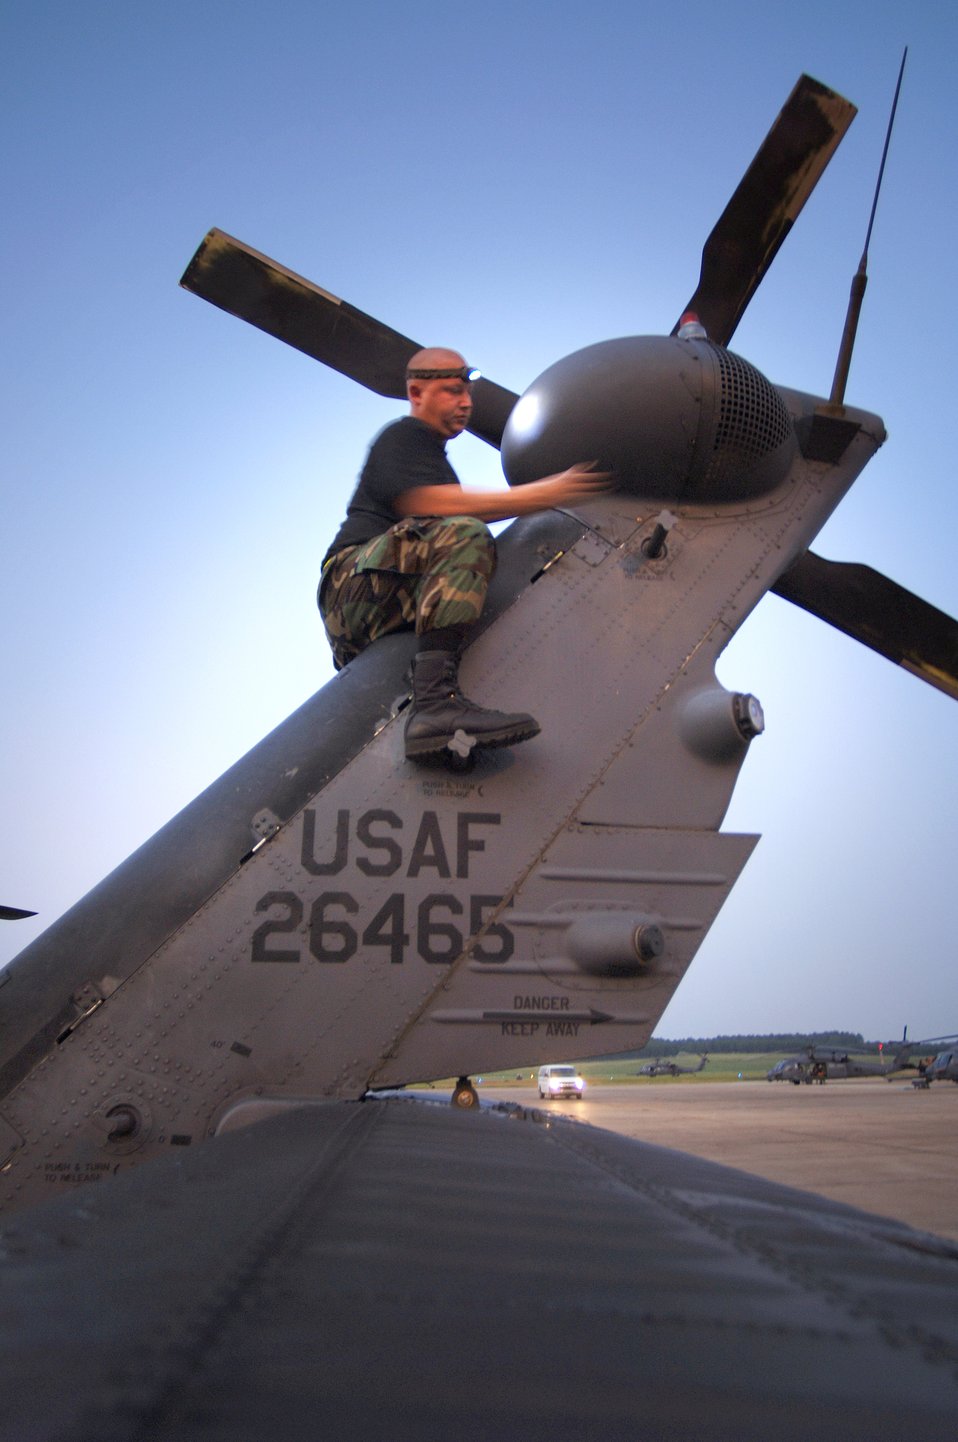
Hurricane relief mission

JACKSON, Miss. -- Staff Sgt. Daniel Woltz helps quick-turn an HH-60G Pave Hawk for a new search and rescue mission. There are more than two dozen helicopters of various types in the group here from six active duty and Reserve bases. Flying day and night, they are taking part in the biggest search and rescue operation in U.S. history. Sergeant Woltz is a 347th Expeditionary Rescue Group crew chief.